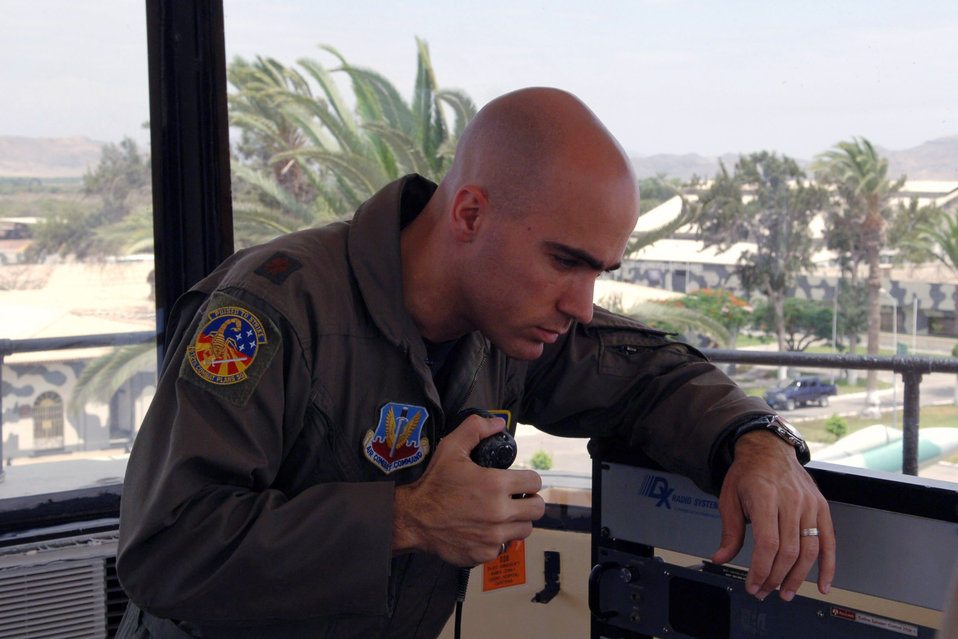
Skills from past career field come into play during exercise

Maj. Brian Baude monitors aircraft arrival and departure with Peruvian air force air traffic controllers during Exercise Falcon and Condor 2007 Feb. 14 in Chiclayo, Peru. The a joint military exercise provides the U.S military the opportunity to work together and build relationships with military and civilian leaders of Peru. Major Baude is a combat airspace manager assigned to 12th Air Force and Air Forces Southern.